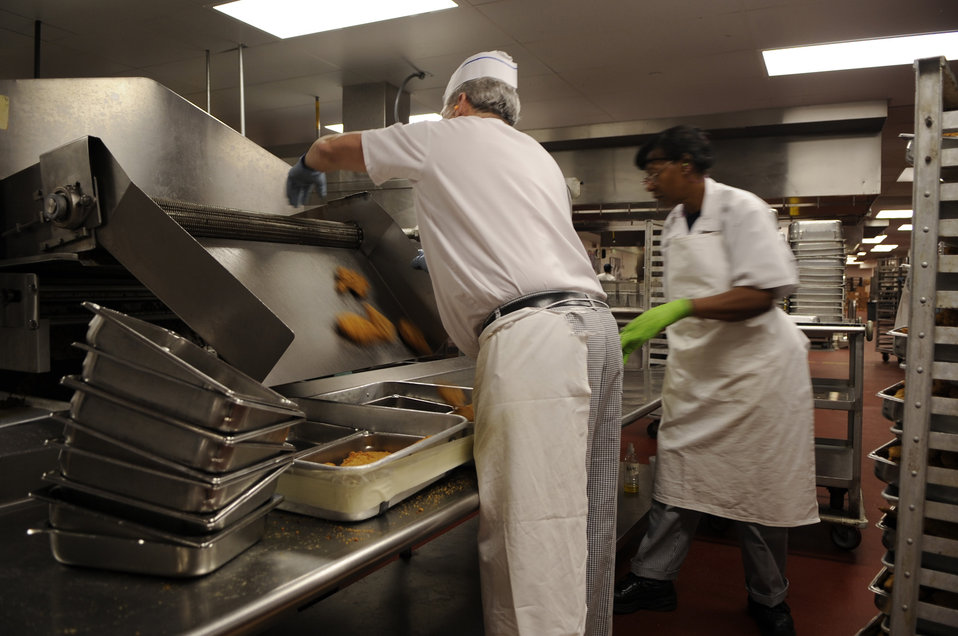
U.S.Air Force Academy Mitchell Hall Cadet Dining Facility

Patrick Burns and Betty Hayes pull chicken from the